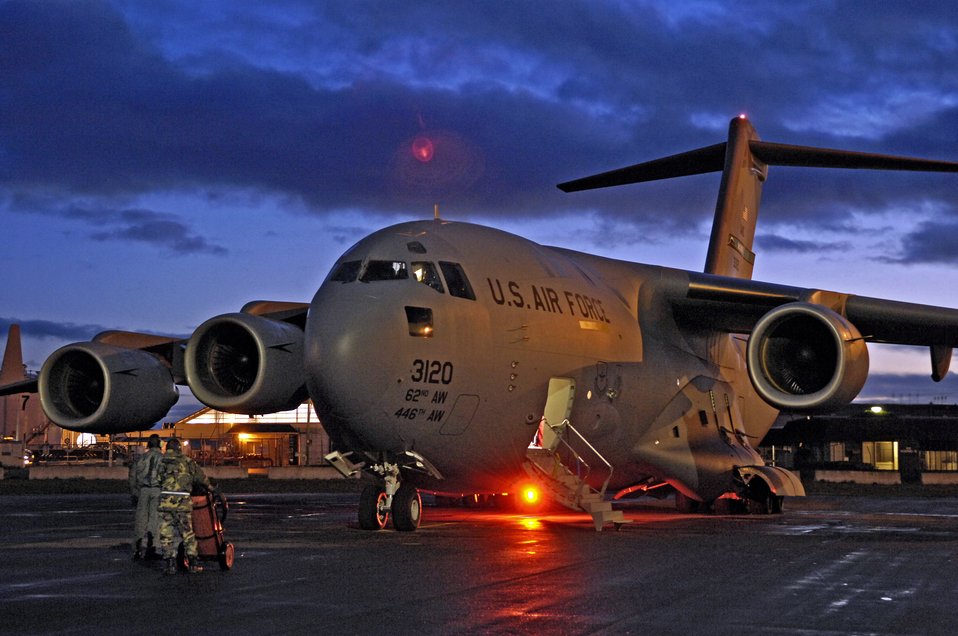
Off to the South Pole

A maintenance crew prepares to launch a C-17 Globemaster III Aug. 20 for a winter fly-in mission from for Operation Deep Freeze Aug. 20 Christchurch, New Zealand. A C-17 and 31 Airmen from McChord Air Force Base, Wash., are flying in an augmentation of scientists, support staff, food and equipment for the U.S. Antarctic Program at McMurdo Station.